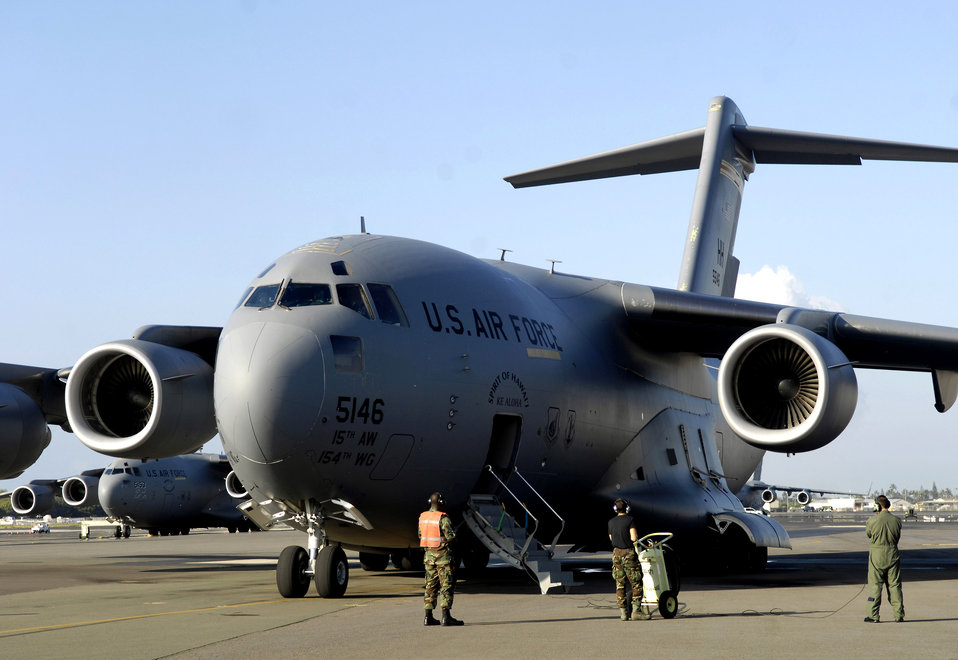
Hickam's C-17s deliver anywhere

Ground and aircrew members prepare a C-17 Globemaster III to depart on a local two-ship airdrop training mission Jan. 7 from Hickam Air Force Base, Hawaii. The C-17s and aircrew members are from the 535th Airlift Squadron, and are conducting the airdrops as part of their currency training.